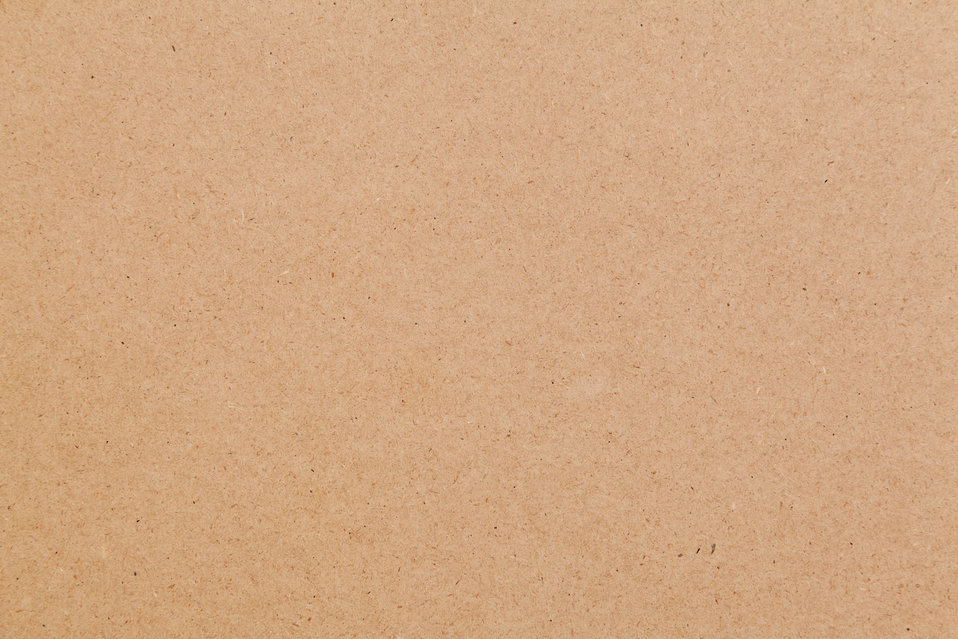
Hard paper texture

Hard pressed paper texture.